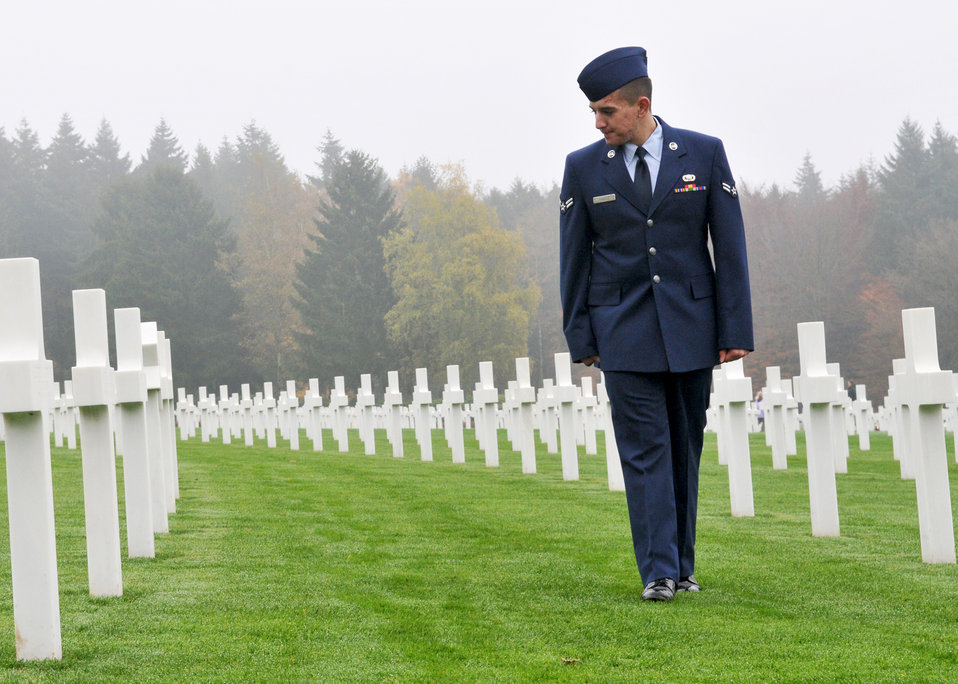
Airmen honor the fallen

Airman 1st Class Michael D. Kimball looks at graves of fallen World War II soldiers at the Luxembourg American Cemetery and Memorial in Hamm, Luxembourg, near Spangdahlem Air Base, Germany.